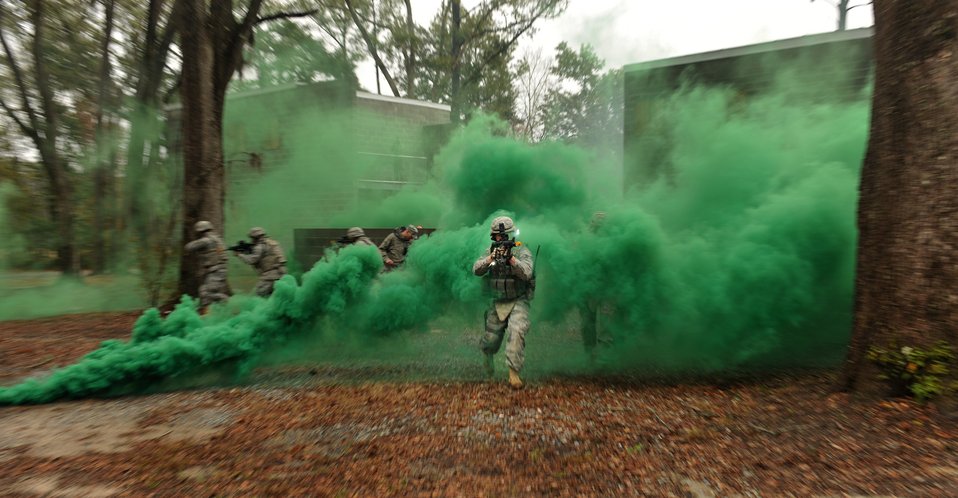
All clear!

Airmen from the 822nd Base Defense Squadron run through green smoke after 'clearing' buildings during a training exercise Feb. 2, 2011, at Moody Air Force Base, Ga.